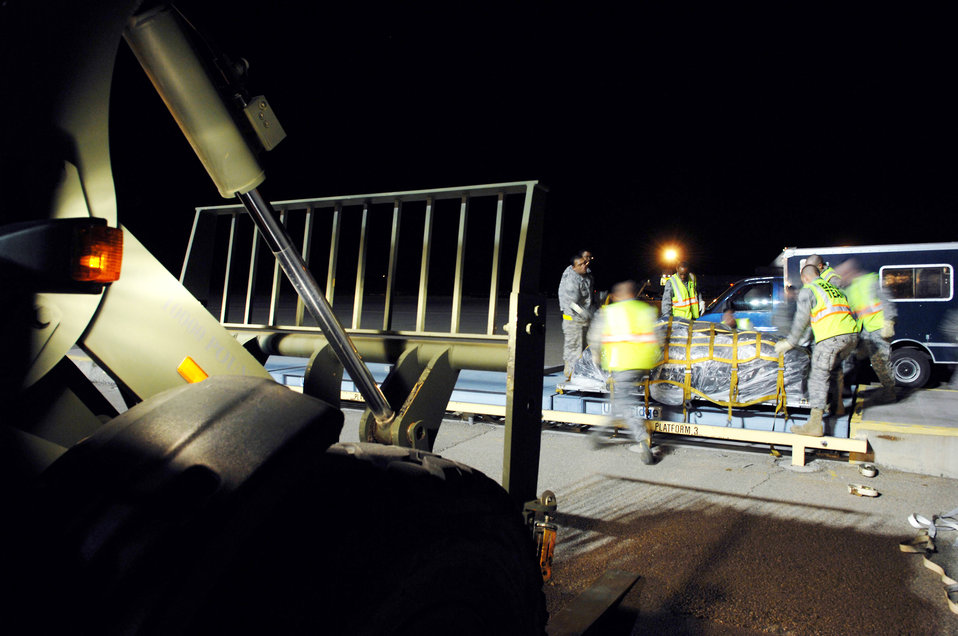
Airmen prepare cargo for a deployment to Chile

Airmen from the 49th Logistics Readiness Squadron prepare cargo for a deployment to Chile March 19, 2010, at Holloman Air Force Base, N.M. The cargo contains baggage and supplies that will help in the relief operations in Chile following the 8.8-magnitude earthquake that hit the South American nation Feb. 27, 2010.